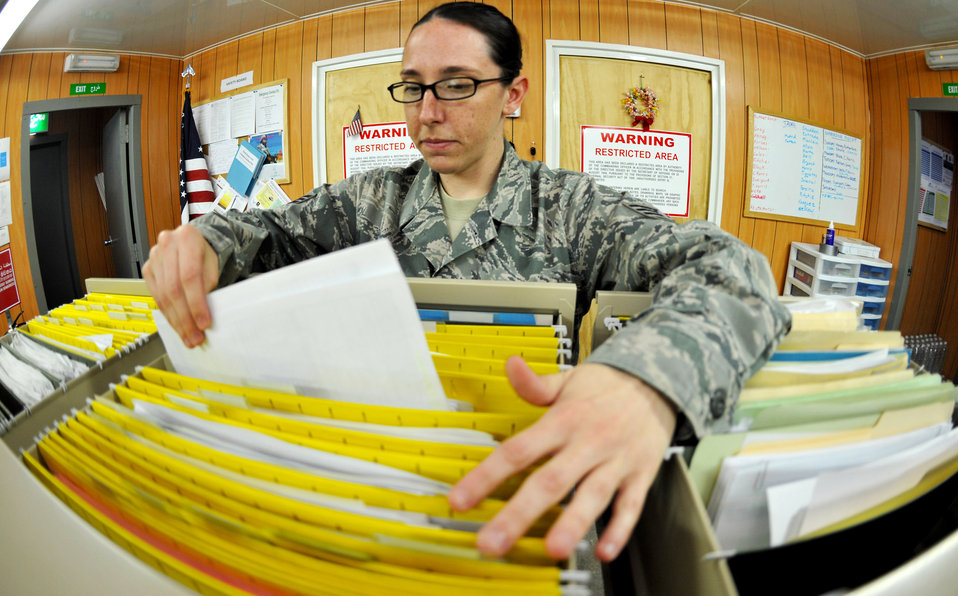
RPAT Airmen

Staff Sgt. Porsha Harris files inventory paperwork in her office, Jan. 29, 2011, on Contingency Operating Base Speicher, Iraq. Sergeant Harris is a customer service and data management representative for COB Speicher's redistribution property assistance team.